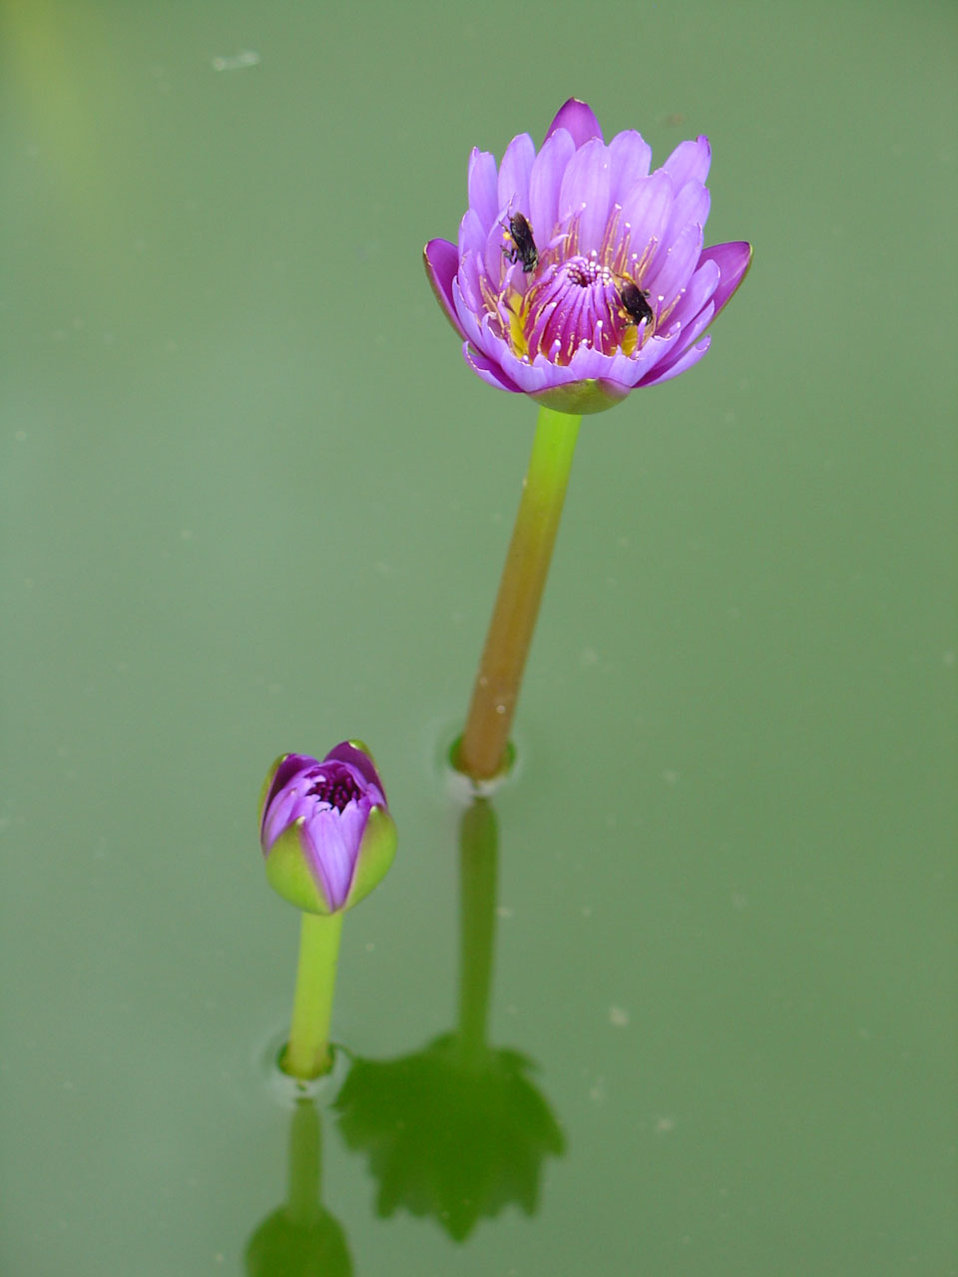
Flower in water.